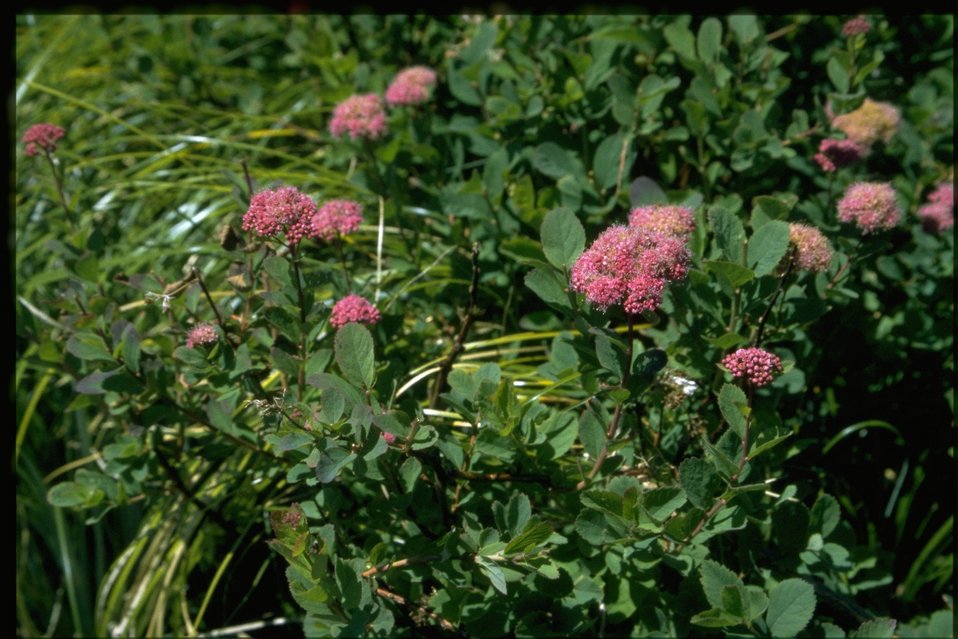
Medium shot of Spiraea densiflora.